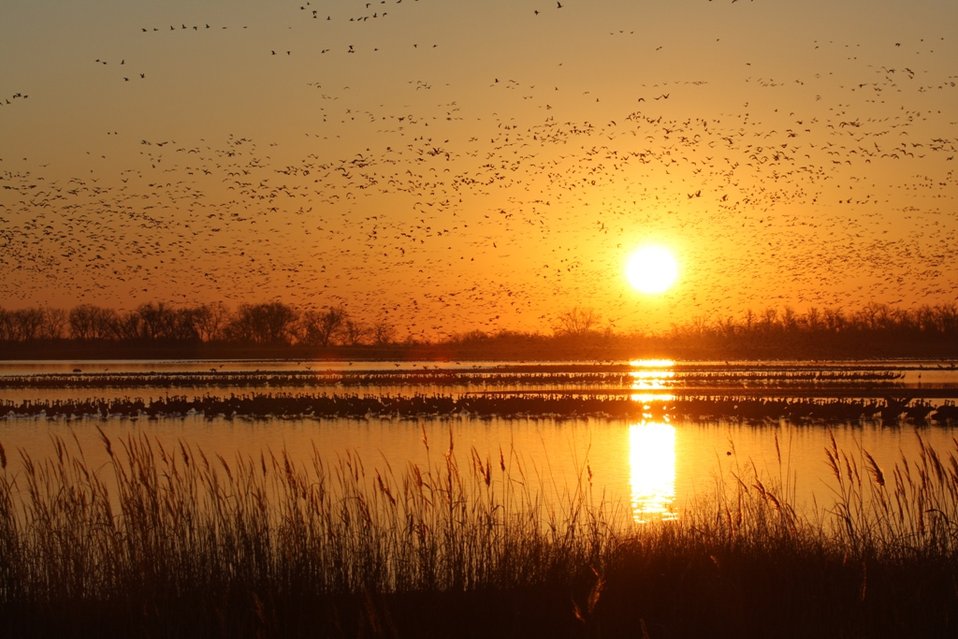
Waterfowl at Quivira National Wildlife Refuge